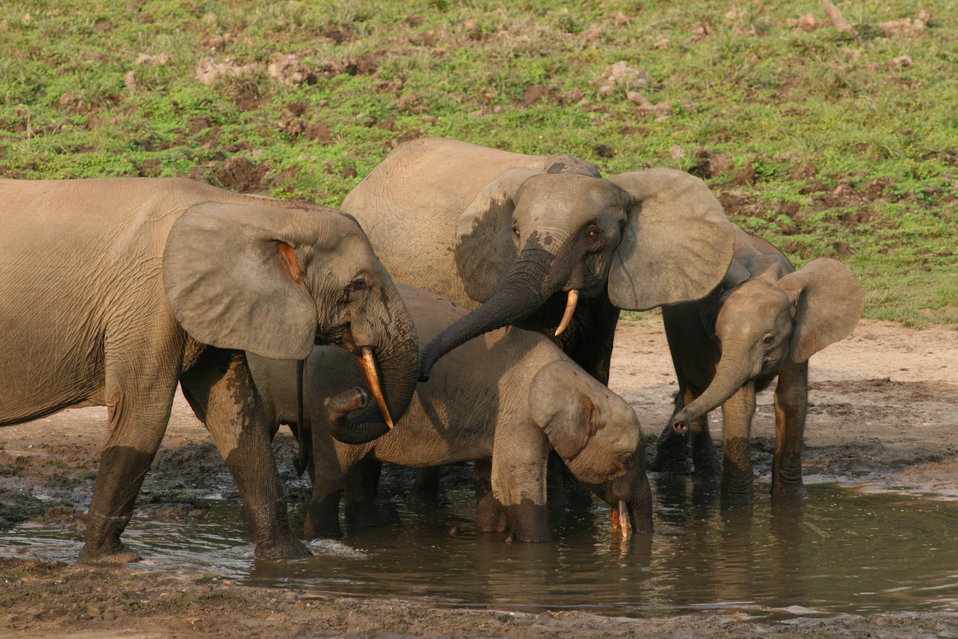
Forest elephant group 1

Forest elephants have thinner, straighter, and pinker tusks than savannah elephants. Unfortunately, forest elephants are in decline and some consumers prefer forest elephant ivory.